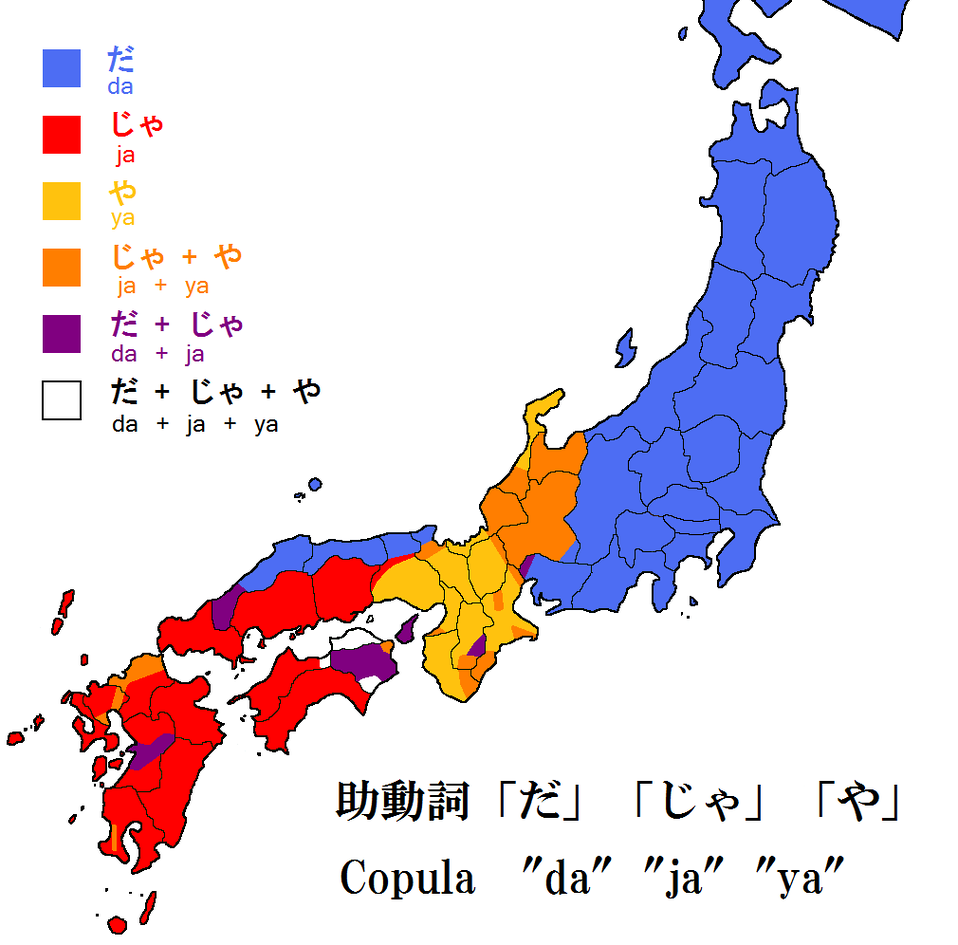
断定の助動詞「だ」「じゃ」「や」の分布図。 Zones map of Japanese copula 'da' 'ja' 'ya'.